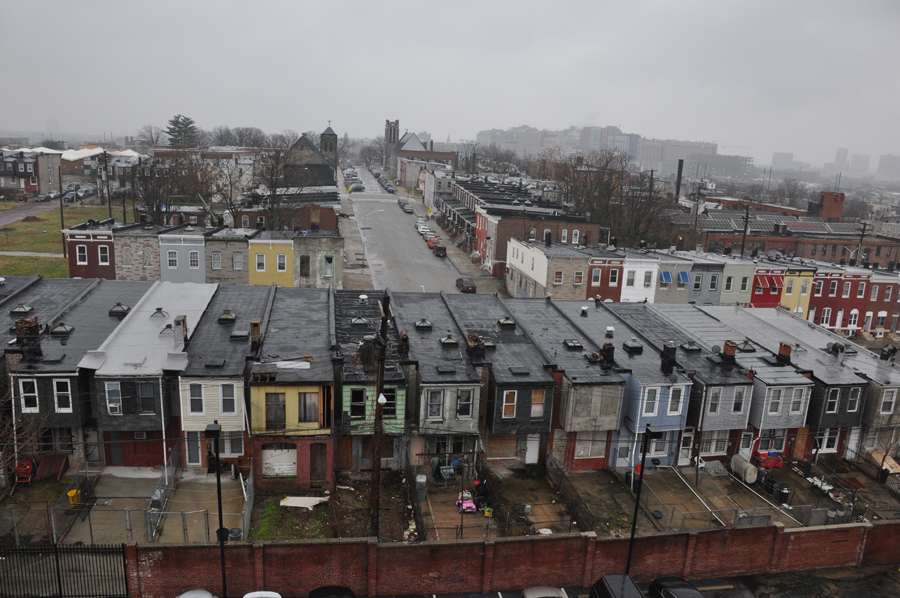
Greener Baltimore

Baltimore, MD's Oliver Neighborhood is a mix of occupied and abandoned rowhouses. The U.S. Forest Service is working with partners to host the Carbon Challenge green building design contest, promoting sustainable and livable neighborhoods in Baltimore, MD and Providence, R.I. (L.F. Chambers, U.S. Forest Service photo)